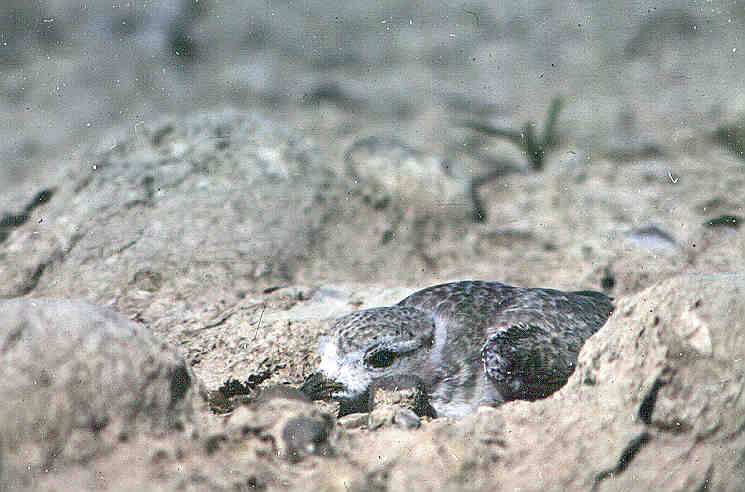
Piping plover on nest at Nelson Reservoir, Bowdoin WMD